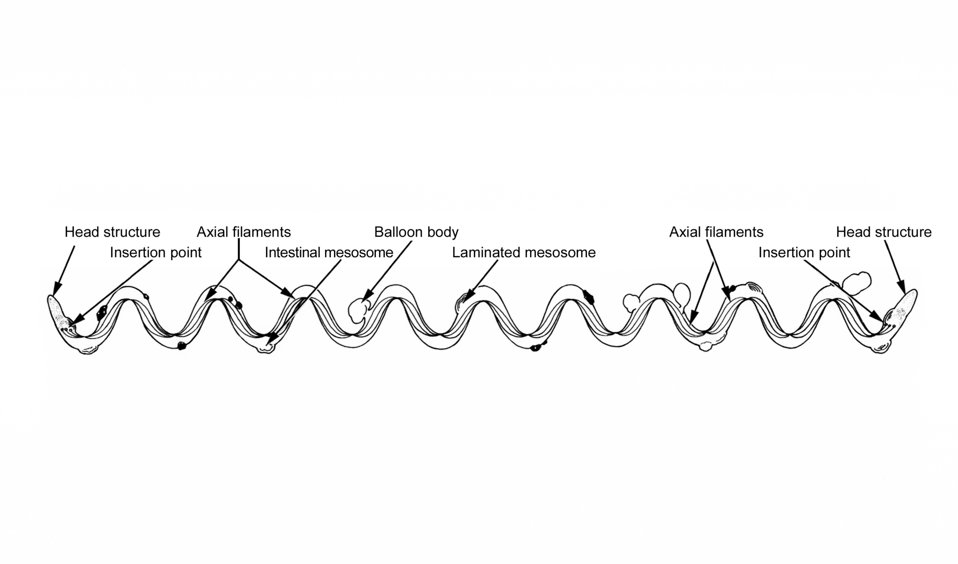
An anatomical illustration of a Treponema pallidum bacterium from a lateral perspective.